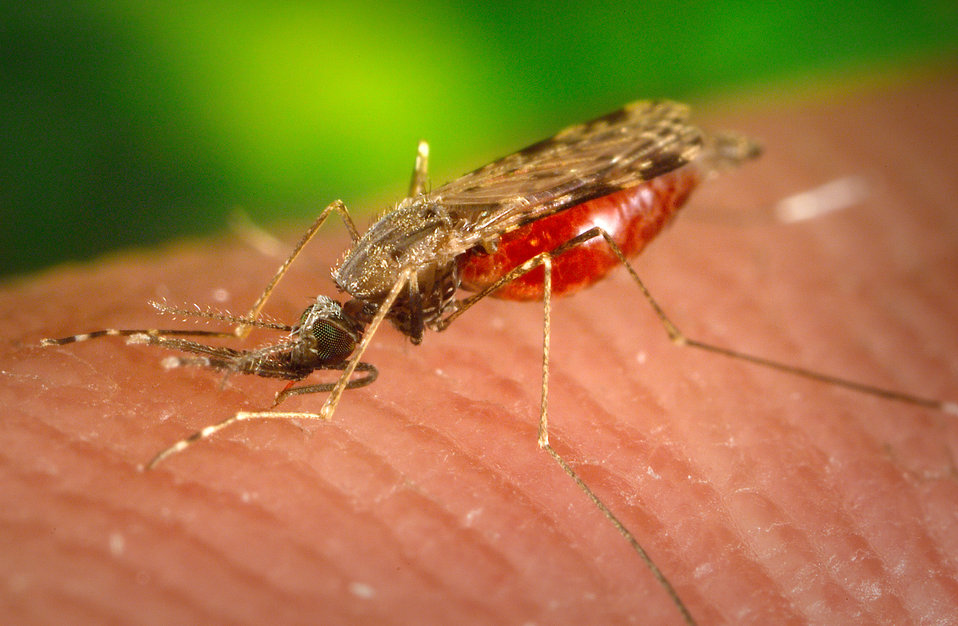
This 2005 photograph depicted a female Anopheles albimanus mosquito while she was feeding on a human host, thereby, becoming engorged with blood.